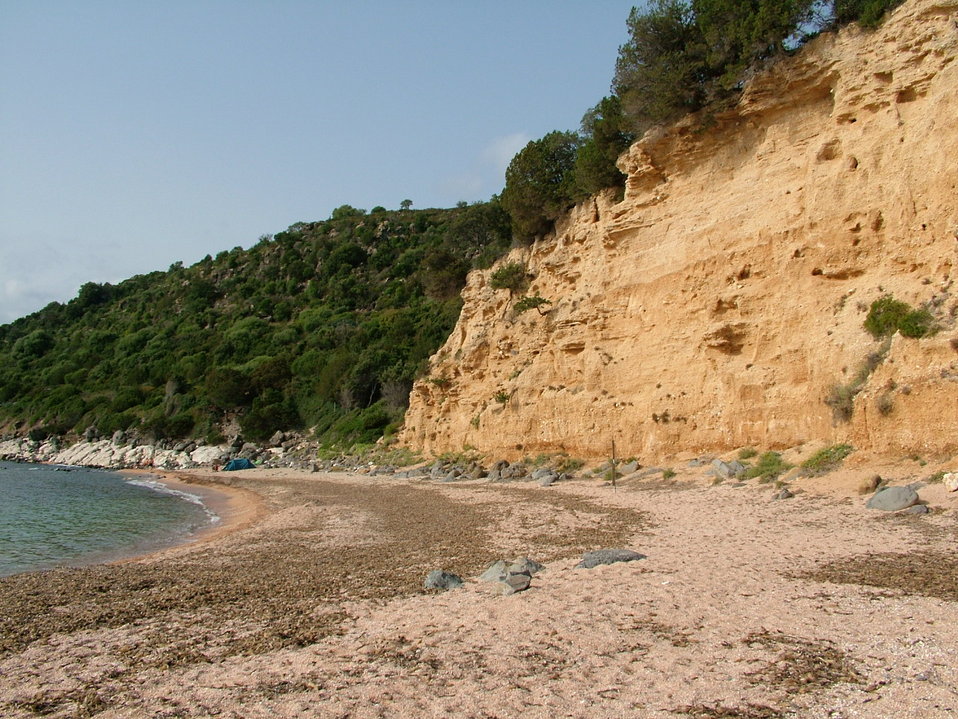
Italiano: Cala Gonone